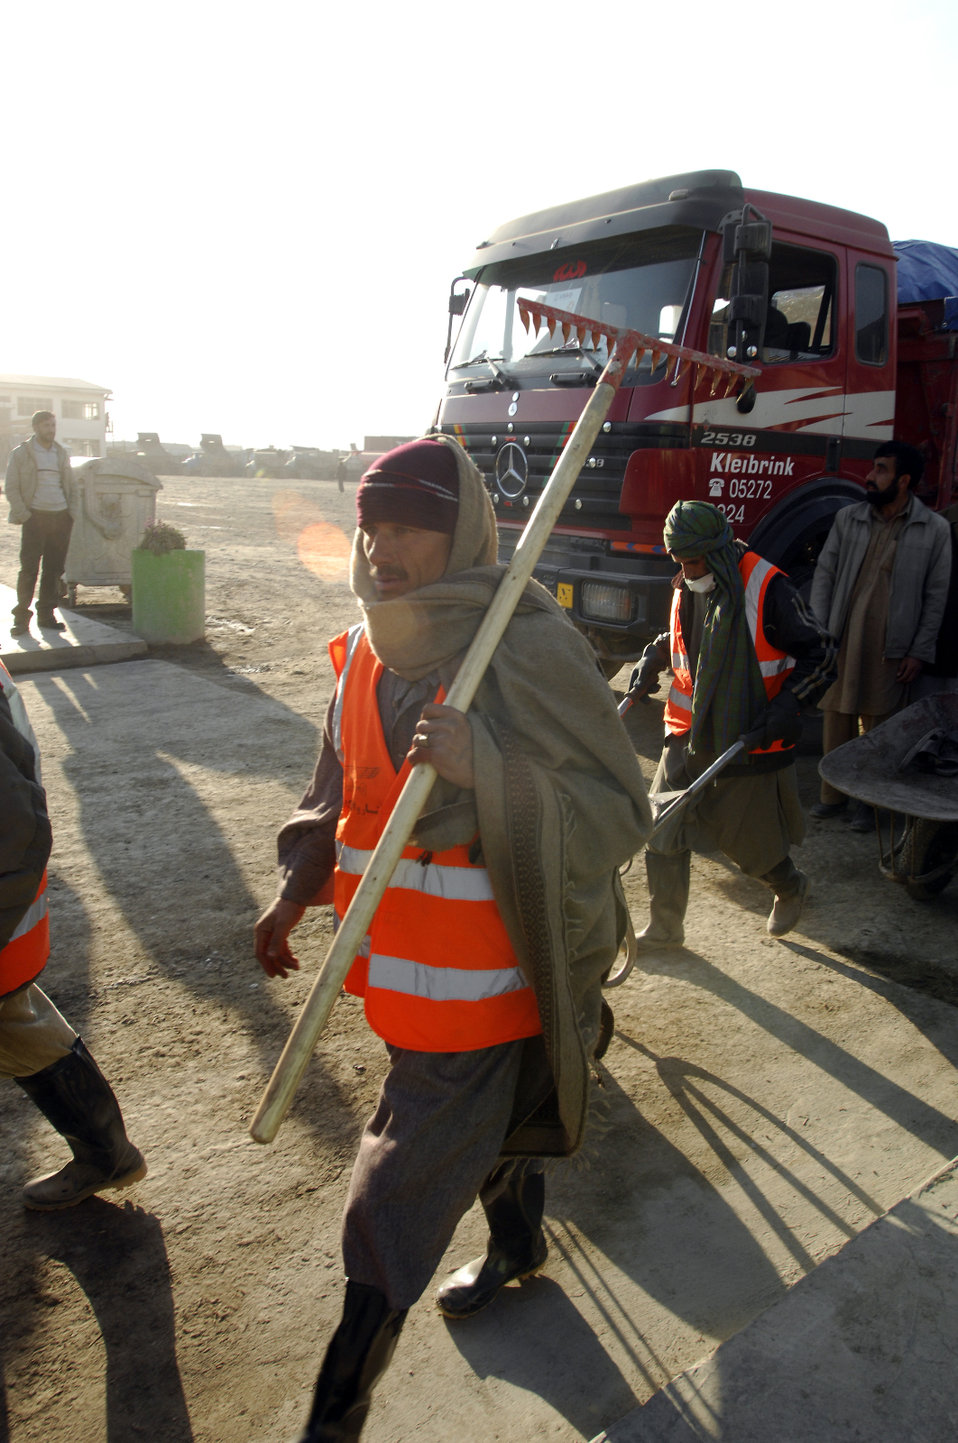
Care51